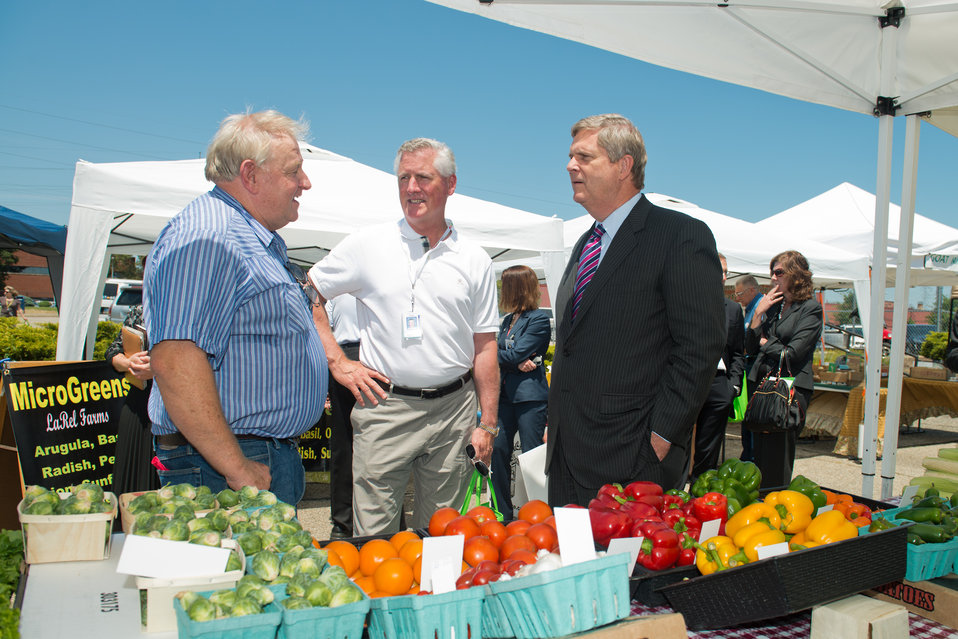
Agriculture Secretary Tom Vilsack (right) chats with a local farmer (left) and G.E. Aviation Health Services Executive John Zerbe (center) at the G.E. Aviation Headquarters popular seasonal Farmers’ Market at the company’s Learning Centre in suburban Cincinnati, OH on Wednesday, June 27, 2012. Fresh, locally cultivated produce, meats and artisan products like cheese and soap are available for employee purchase in the G.E. Aviation headquarters parking lot. Secretary Vilsack was in Ohio to highlight the U.S. Department of Agriculture’s (USDA) collaboration with the Ohio Aerospace Institute, air carriers and producer groups to develop a Midwest-regional approach to providing renewable jet fuel at G.E Aviation’s Cincinnati-area facilities.